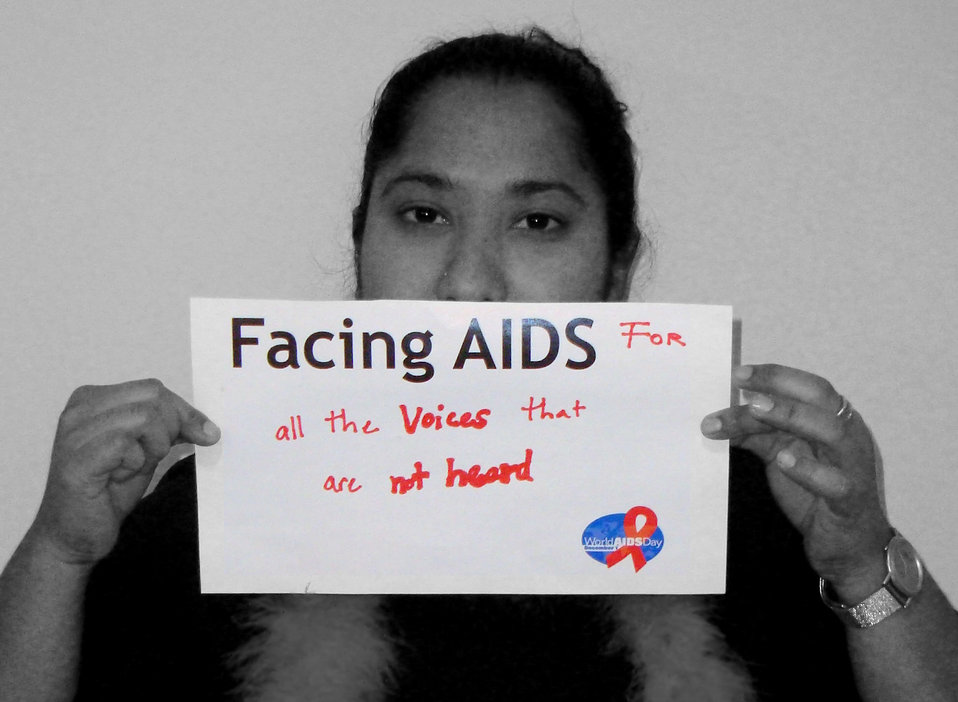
FacingAIDSCampaign 062

'Facing AIDS for all the voices that are not heard'